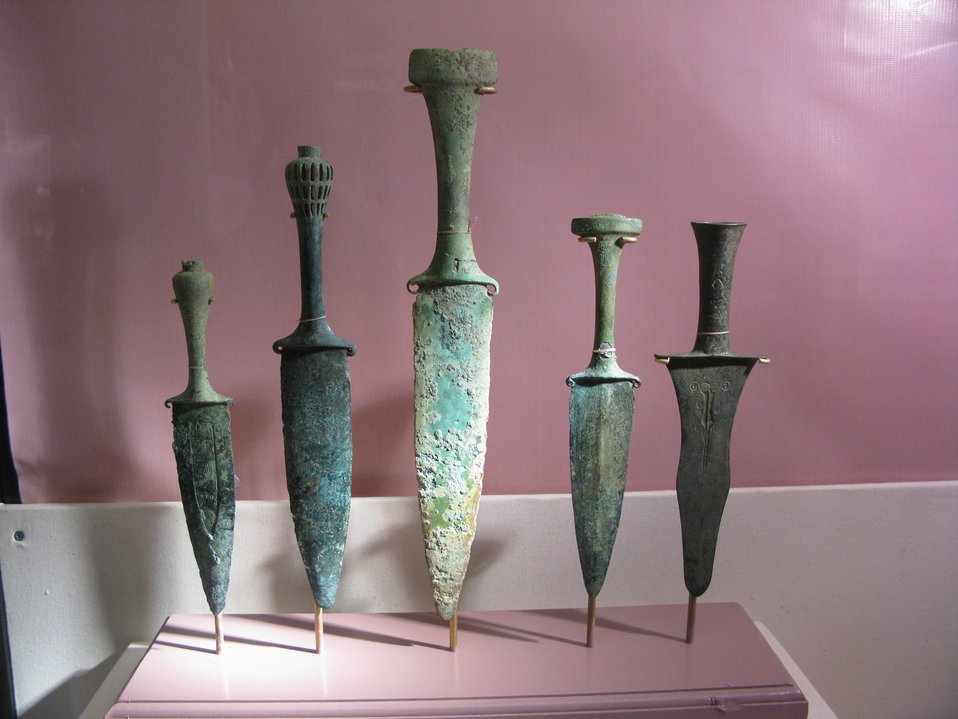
Bronze daggers, Dong Son Culture, 500 BCE - 0. Tiếng Việt: Dao găm đồng thuộc nền văn hóa Đông Sơn, niên đại 500 TCN - 0.